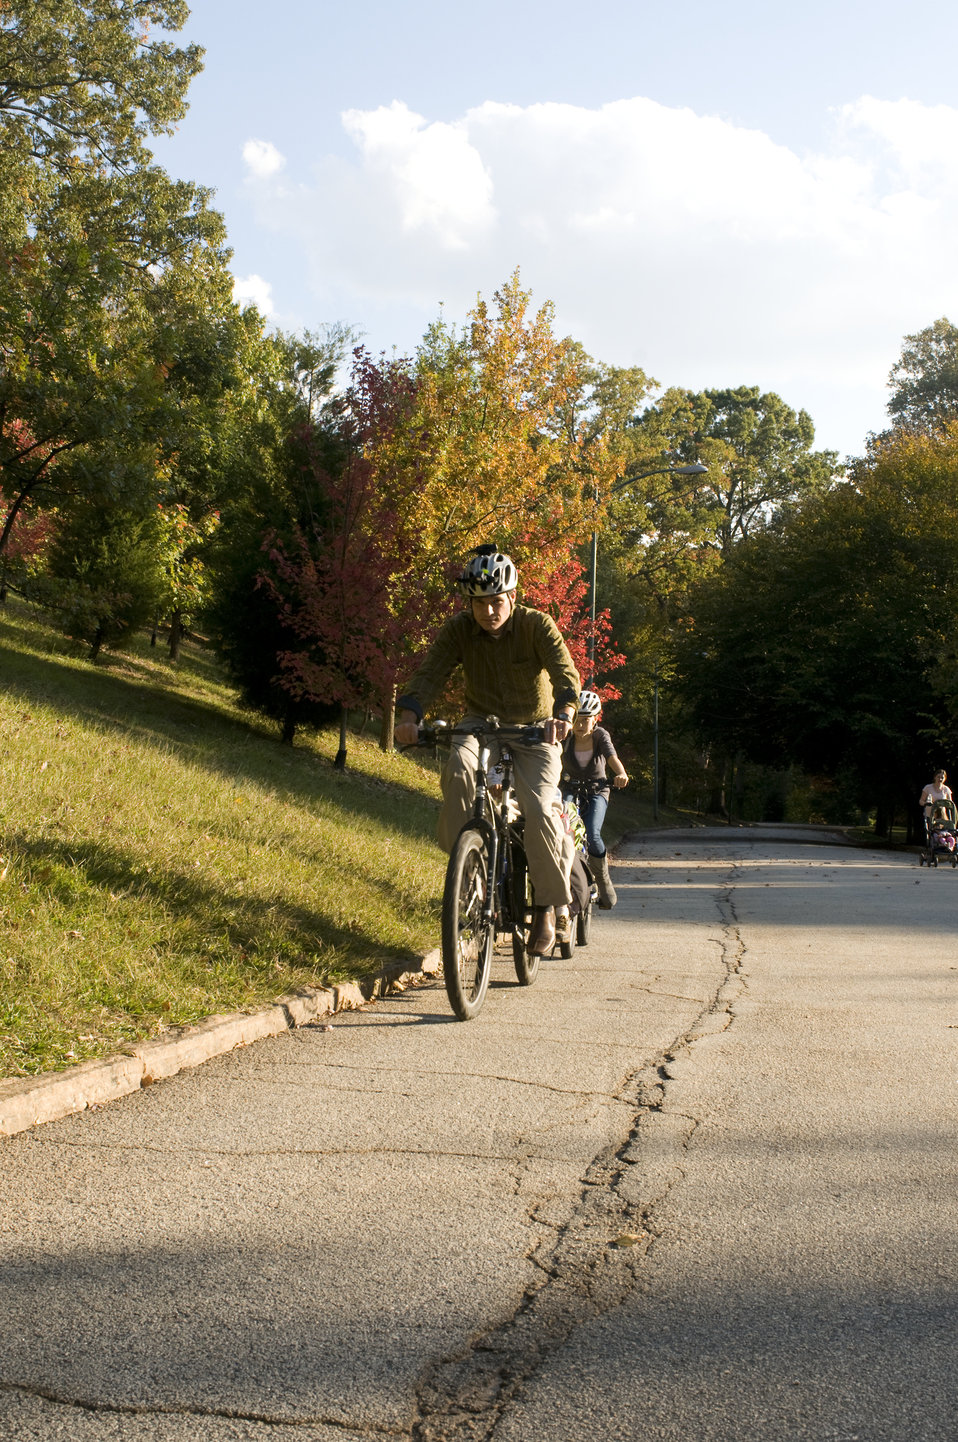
Protective measures having been taken by a careful father, this dad and his two young children were on their way, as they embarked on a Georgian bicycle trip. Riding behind her father, the daughter was riding her own bike, while the son, seated in a small child-safe bicycle seat, was riding on the same bike as his dad. All three were wearing aerodynamic safety helmets, and clothing to protect them from the sun, wind and insects. The only thing missing, was a piece of outerwear, which was very bright in color, allow for a greater degree of rider visibility.